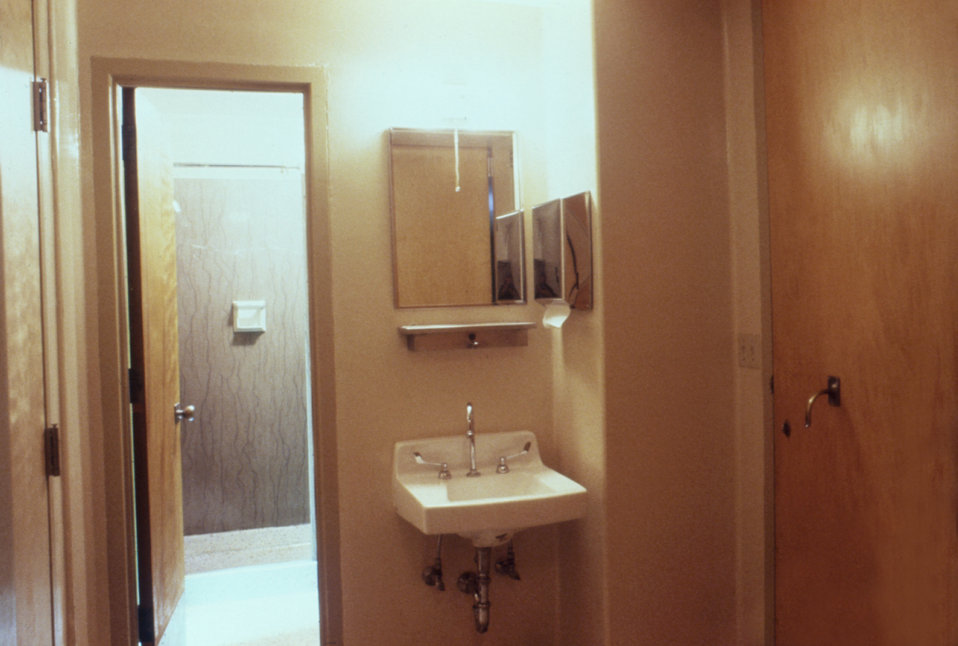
This 1980 photograph depicts the inside of a Vicker's isolation suite at Georgia Baptist Medical Center (now Atlanta Medical Center).